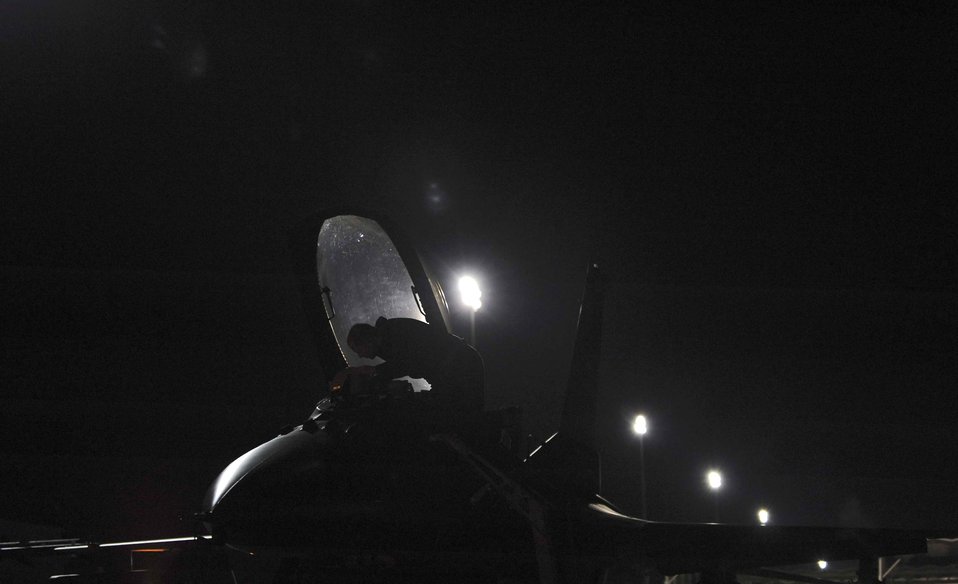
Nighttime operations

Airman 1st Class Patrick Densford inspects the cockpit of an F-16 Fighting Falcon before night flying operations during Red Flag 09-3 Feb. 26 at Nellis Air Force Base, Nev. Red Flag is a multinational exercise providing a realistic environment to practice combat scenarios. Airman Densford is a 52nd Aircraft Maintenance Squadron F-16 crew chief deployed from Spangdahlem Air Base, Germany.